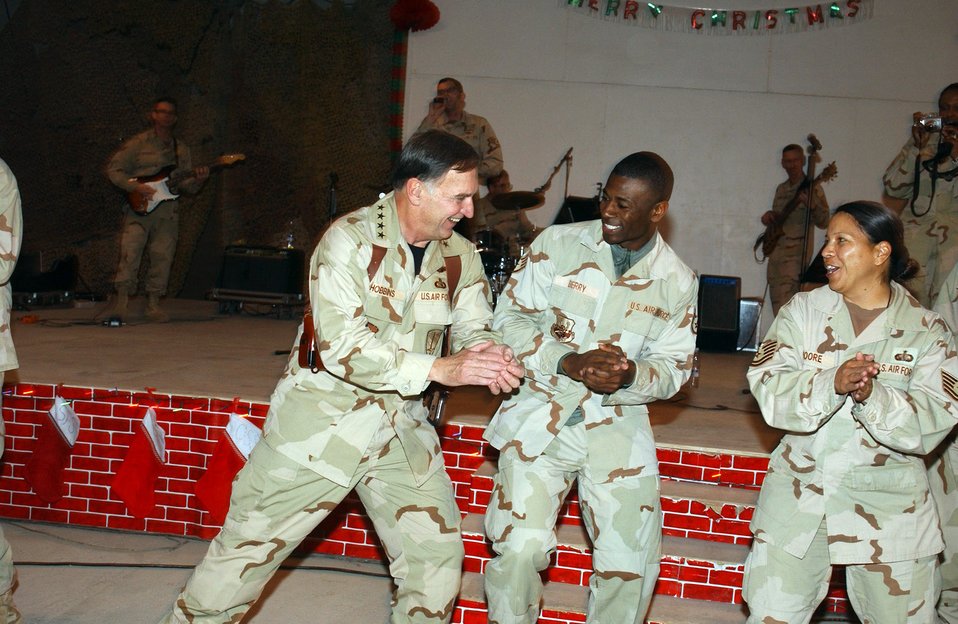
Desert tour

ALI BASE, Iraq (AFPN) -- The U.S. Air Forces in Europe Touch and Go Band had the base